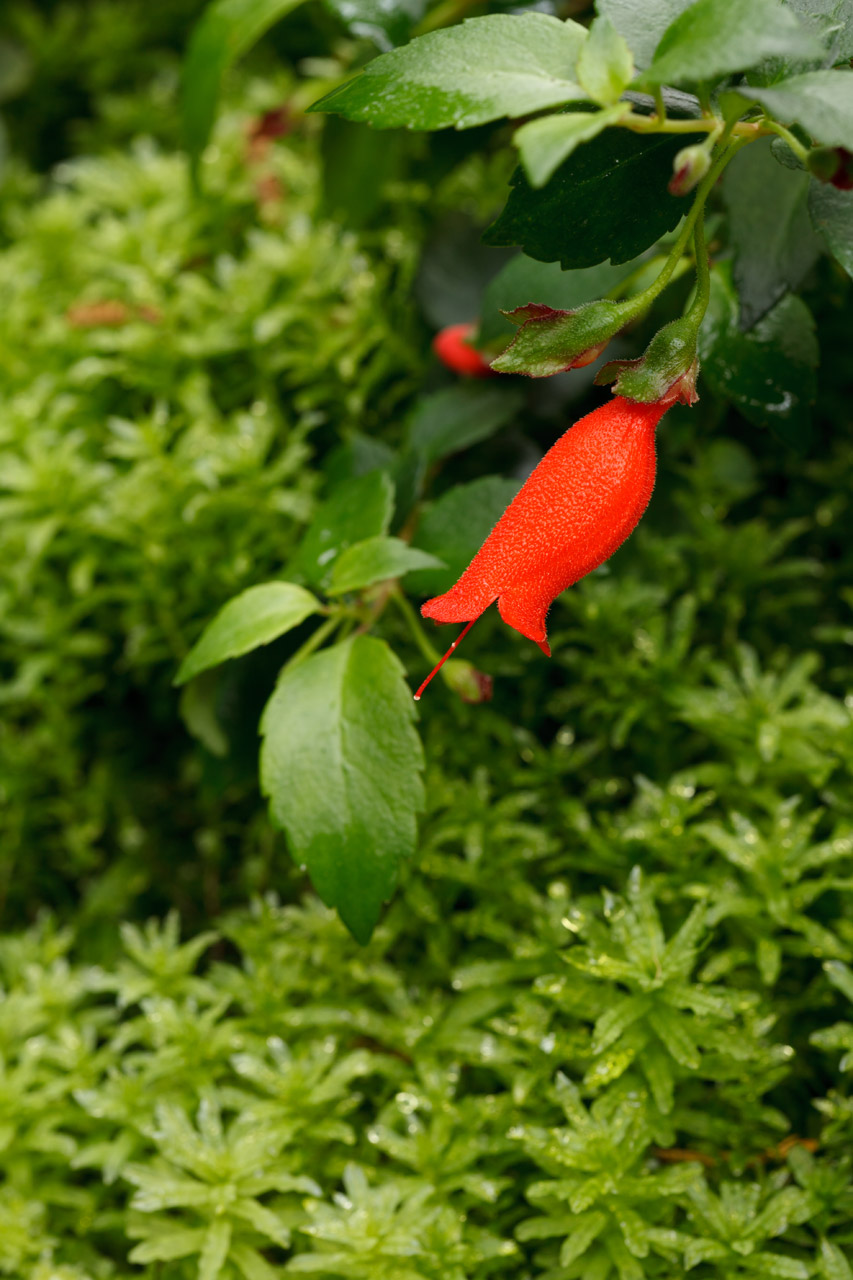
Red flower on green background in botanical garden.